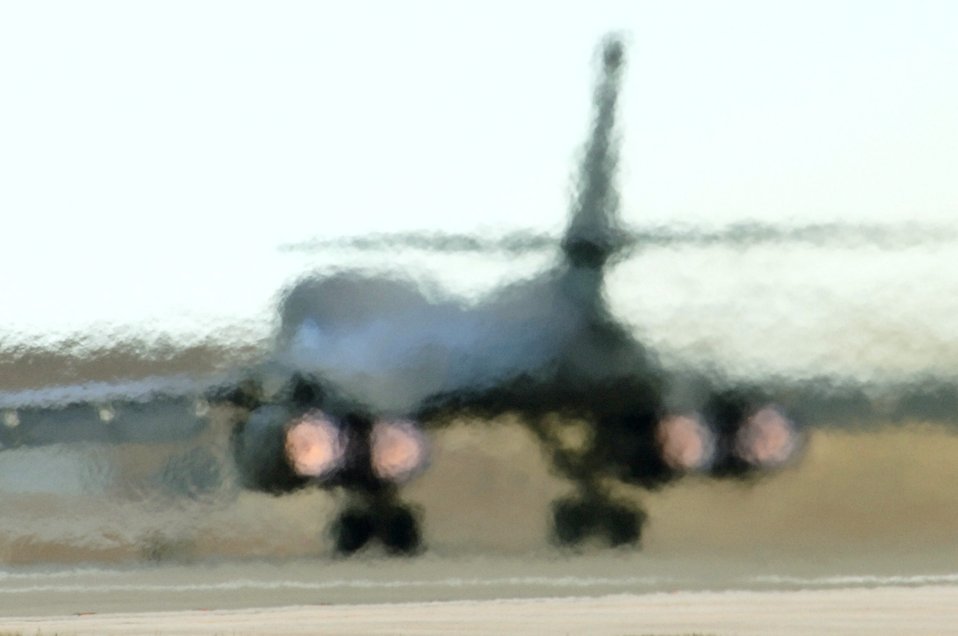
Fine-tuning the fleet

A B-1B Lancer from the 34th Bomb Squadron takes off from Ellsworth Air Force Base, S.D., March 06 for an operational readiness exercise mission. Base officials are preparing for a scheduled operational readiness inspection later this year.